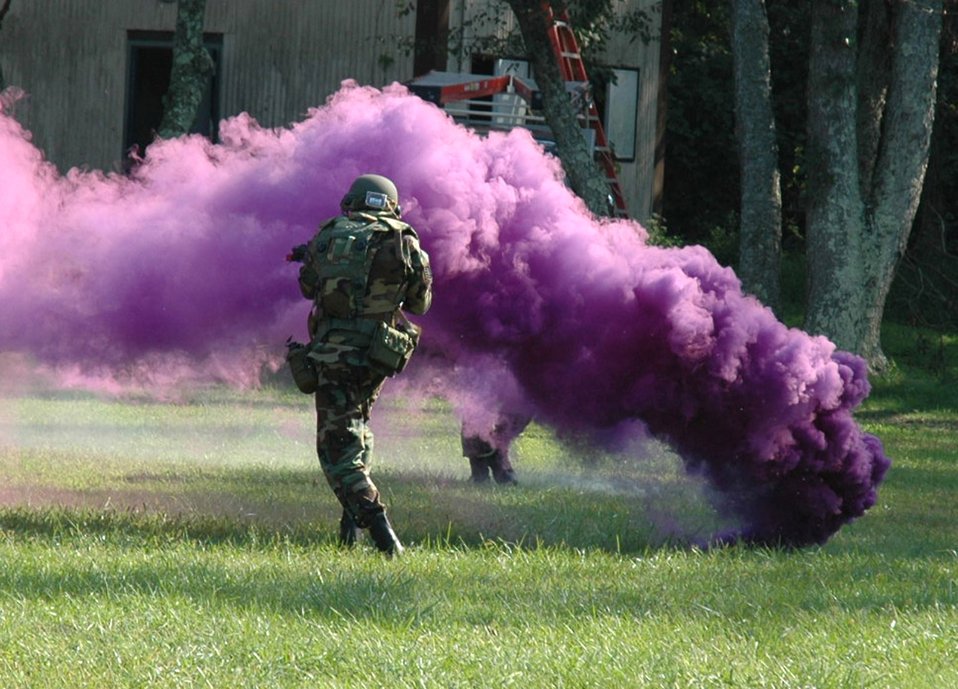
Contingency training sharpens combat skills

A student in the Air Mobility Warfare Center's Advanced Contingency Skills Training Course 06-5 at Fort Dix, N.J., deploys smoke during a training session at a tactical range there Sept. 18. More than 60 Airmen are participating in the training course, learning numerous combat-related skills including tactics, media skills, convoy operations, first aid, and field craft. The course is taught by the AMWC's 421st Combat Training Squadron.